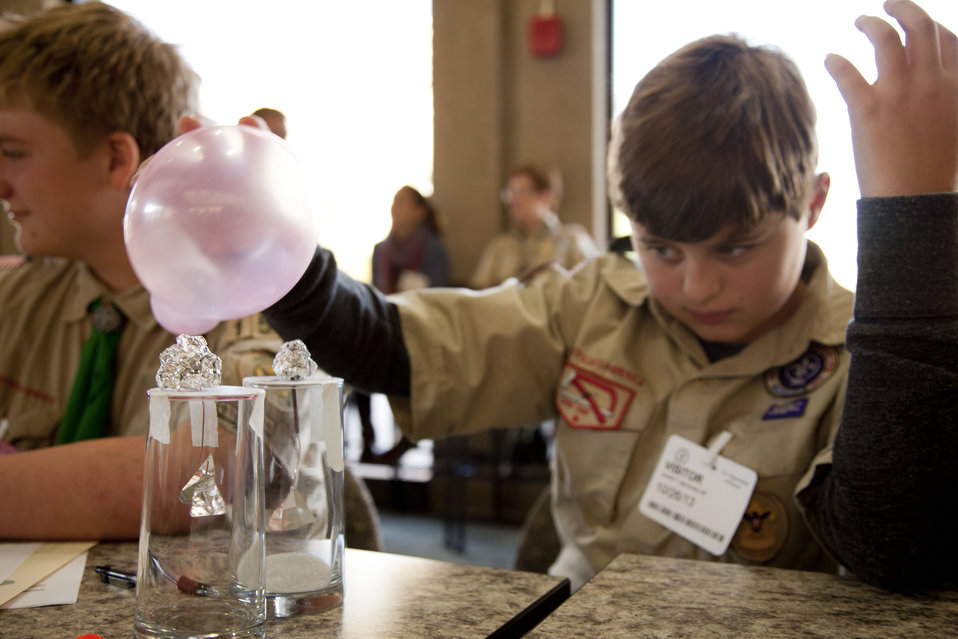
A Boy Scout uses static electricity from his hair to test charge with the electroscope he built.